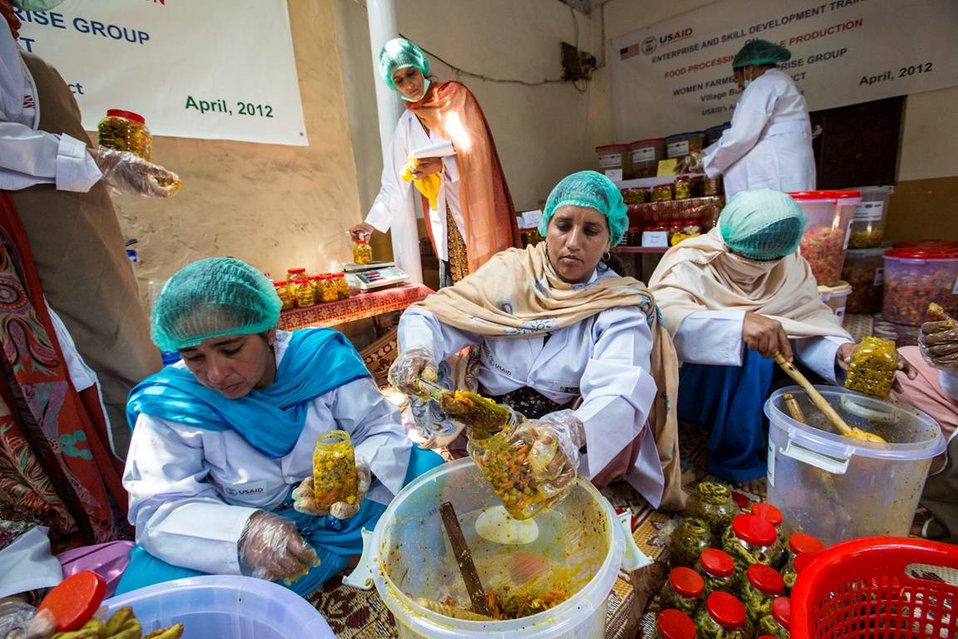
USAID's Agribusiness Project Women FEG for Food Processing - Pickle Production at Village Jabbi

www.usaid.gov/pk/db/sectors/growth/project 750.html